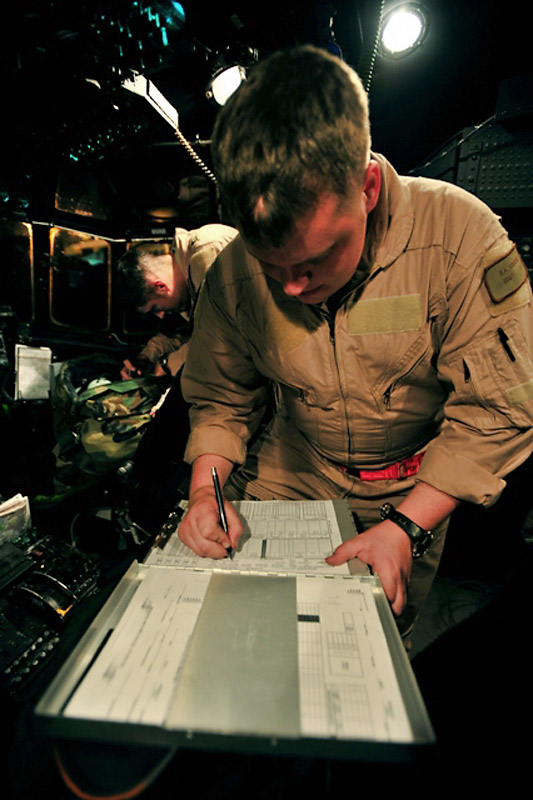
Servicemembers search for Americans in capsized boat

Servicemembers from Combined Joint Task Force-Horn of Africa participated in a three-day rescue operation 260 miles off coast of Madagascar in an effort to save three Americans from a capsized sailboat.